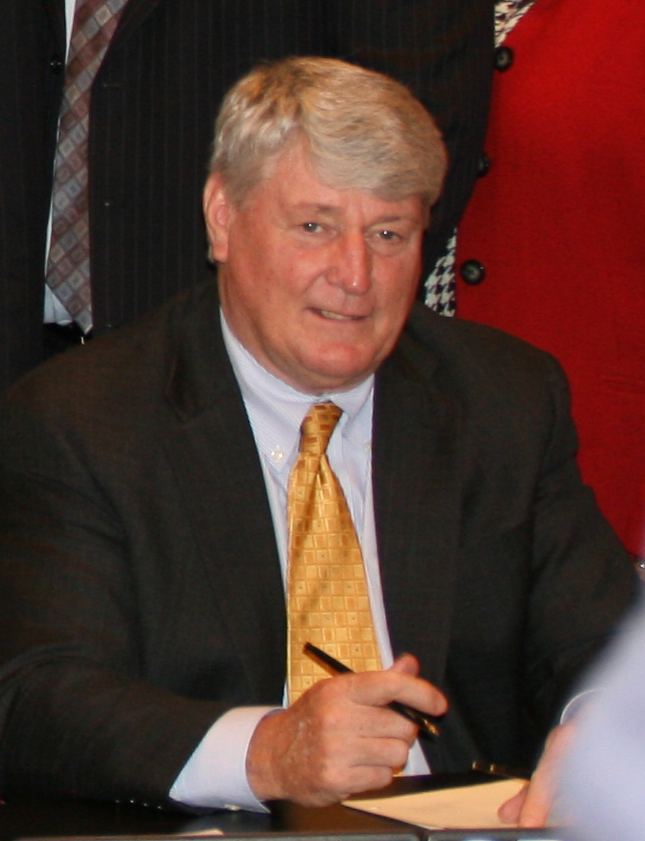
Speaker Mike Busch